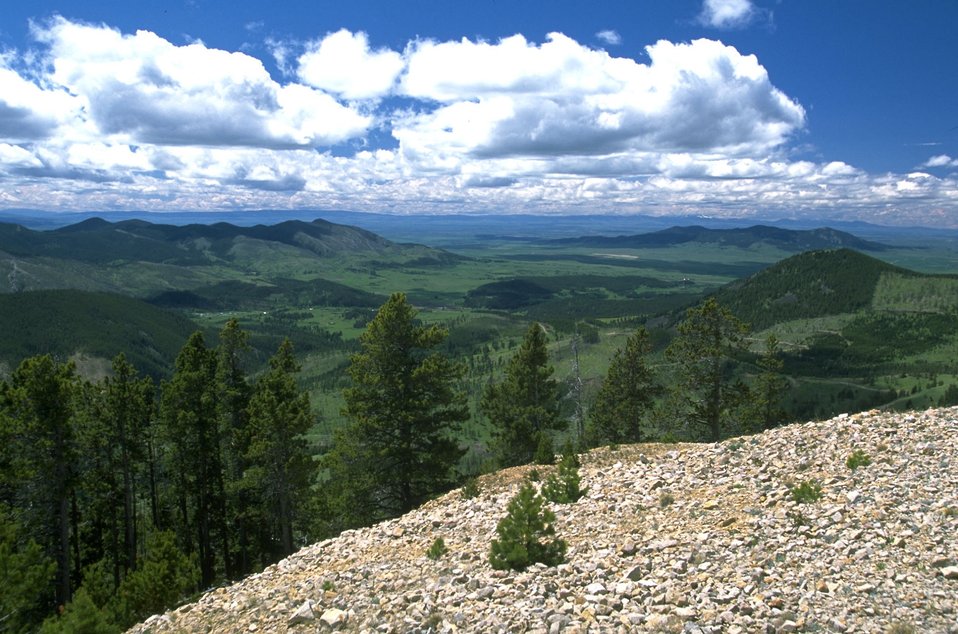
Fluffy clouds over a valley in the Judith Mountains